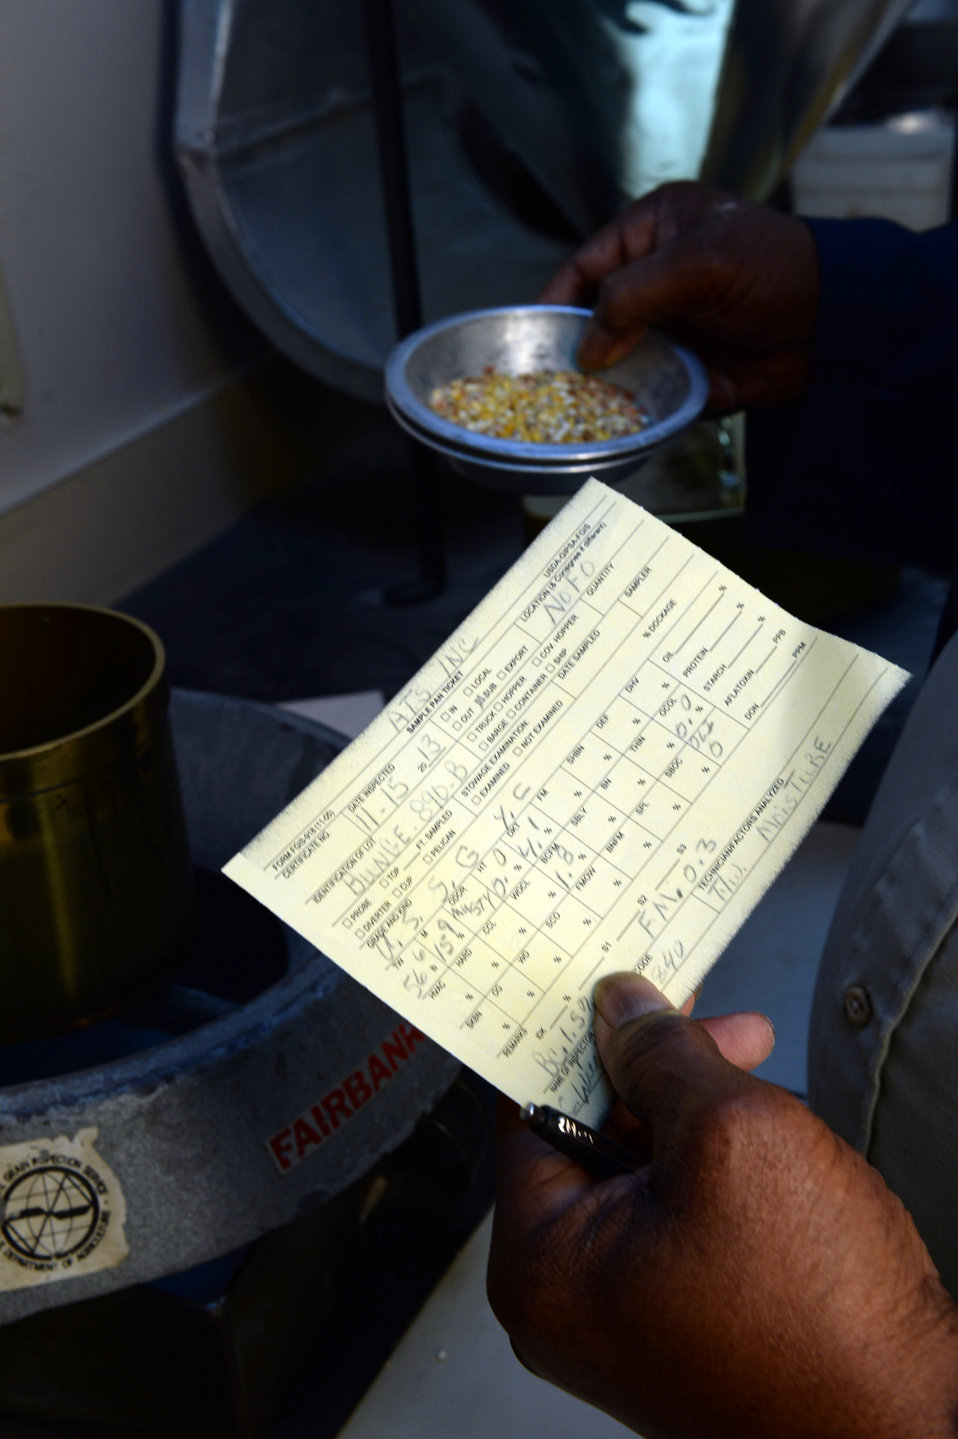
A U.S. Department of Agriculture (USDA) Grain Inspection, Packers and Stockyards Administration (GIPSA) Federal Grain Inspection Service (FGIS) employee examines the tests results from earlier corn samples at the FGIS inspection laboratory in New Orleans, LA on Monday, Nov. 18, 2013.